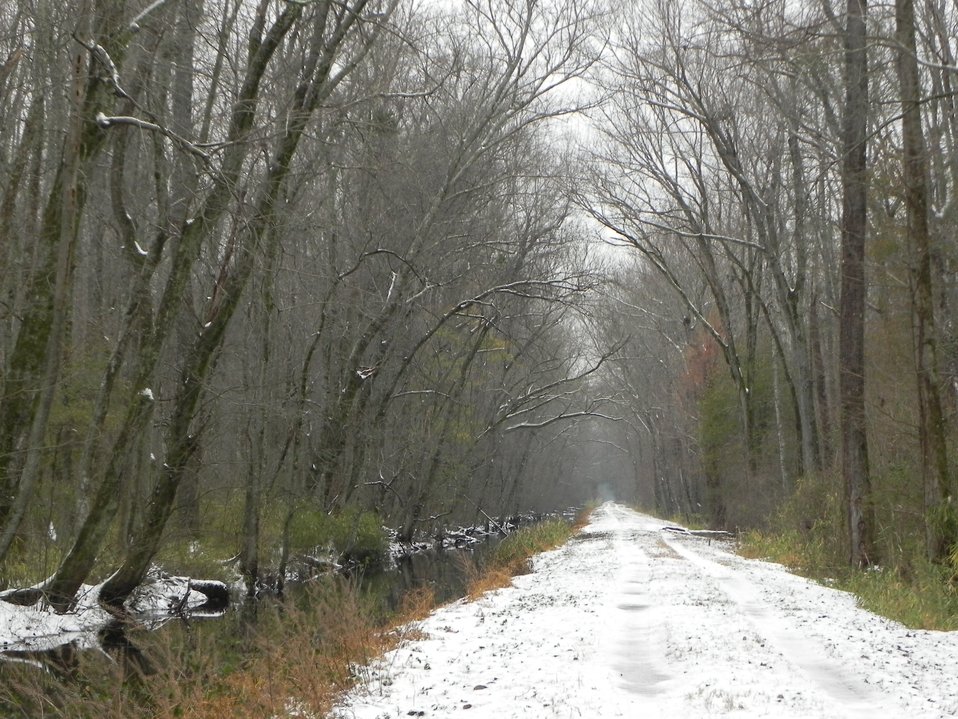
Washington Ditch Trail

Great Dismal Swamp National Wildlife Refuge, VA.